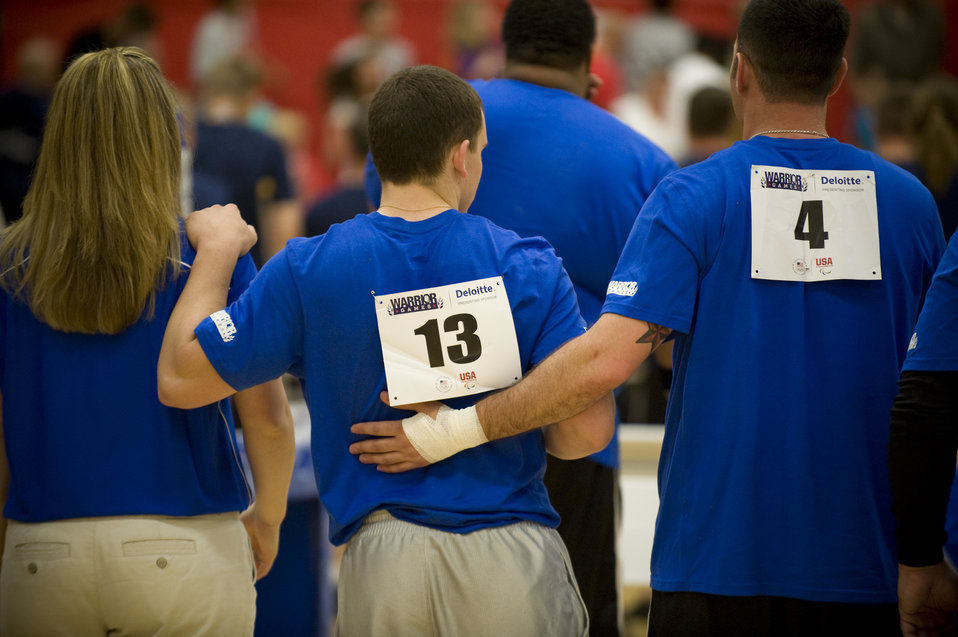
Army marches through Air Force

Members of the Air Force volleyball team stand for the National Anthem May 19, 2011, during the the second annual Warrior Games in Colorado Springs, Colo. The Army won the series with two straight games.